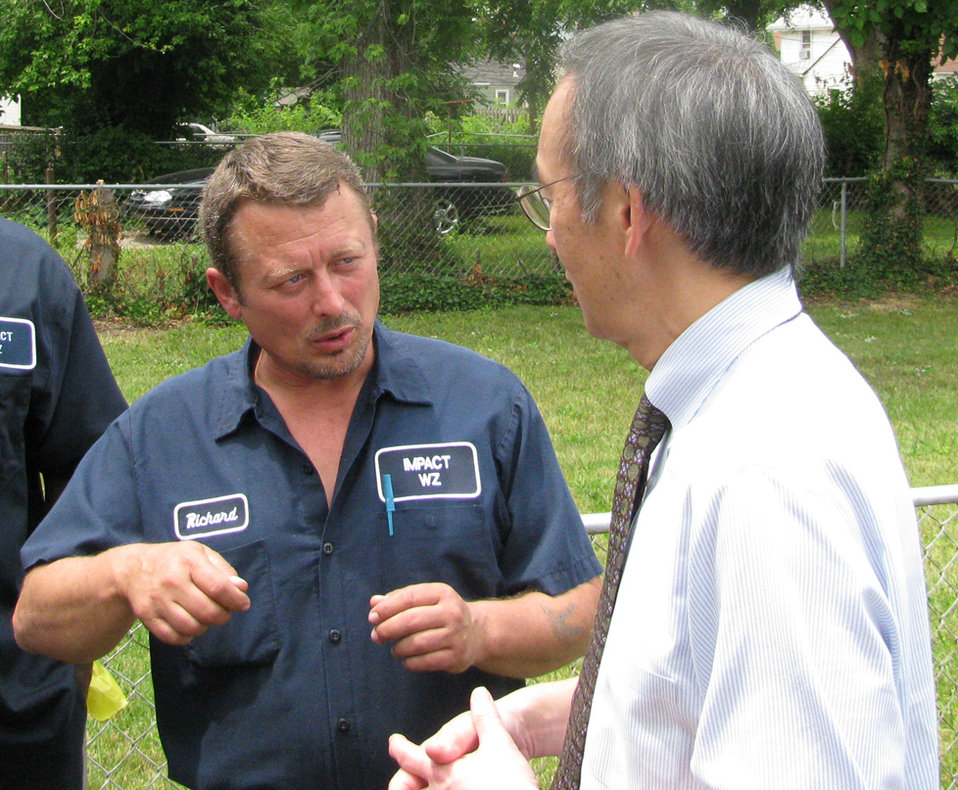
Ohio1